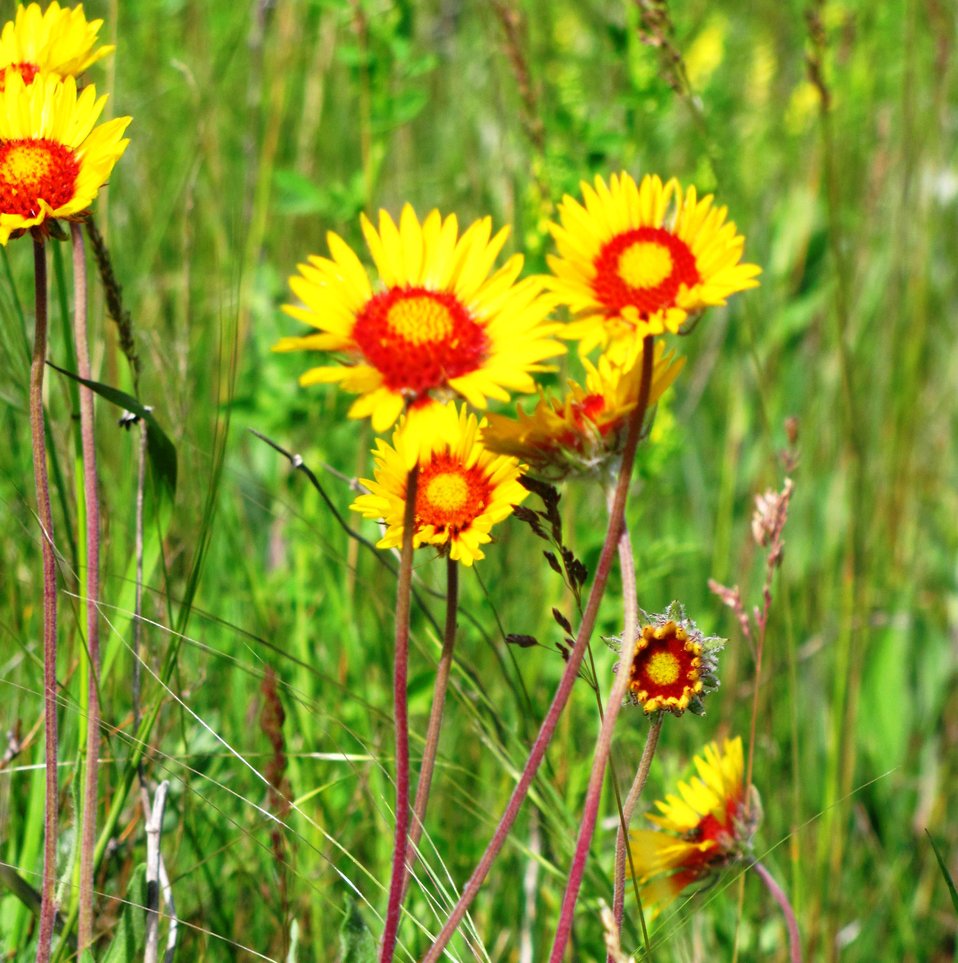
Blanket Flower

These native Blanket Flowers (Gaillardia aristata) were found brightly scattered throughout the rolling prairie at the Chase Lake NWR/WMD/PP Headquarters.

Photo Credit: Char Binstock/USFWS; Woodworth, ND (2012)

Photo Contest Entry #101